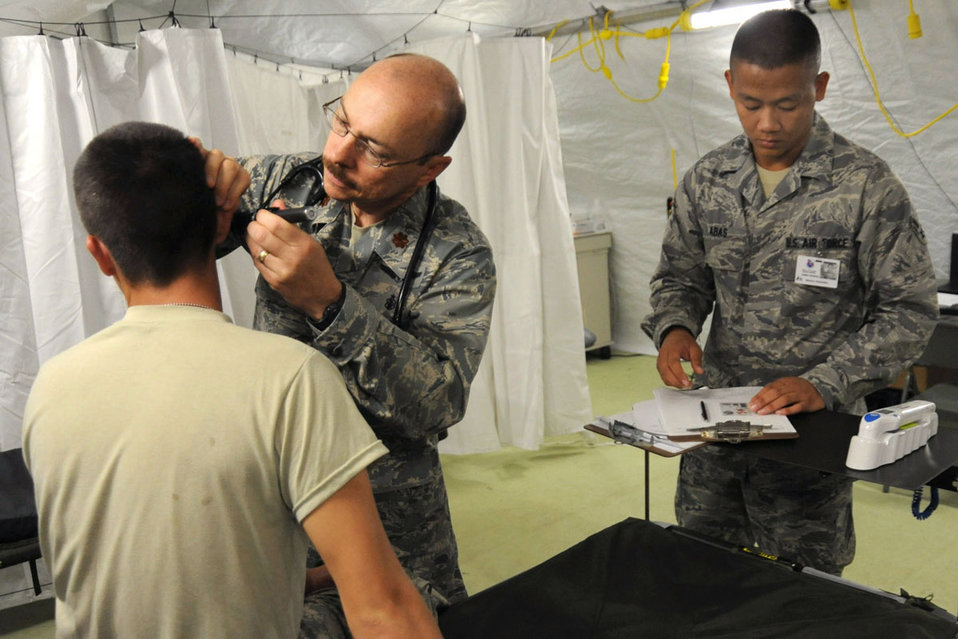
2010 National Scout Jamboree

Maintaining a field hospital is just one of the behind-the-scenes services Airmen are providing at the 100th National Boy Scout Jamboree taking place at Fort A.P. Hill, Va. Here, Maj. David De Lang, a registered nurse from Elmendorf Air Force Base, Alaska, examines a sick patient as Airman 1st Class Wilfredo Abas, from Randolph AFB, Texas, assists.